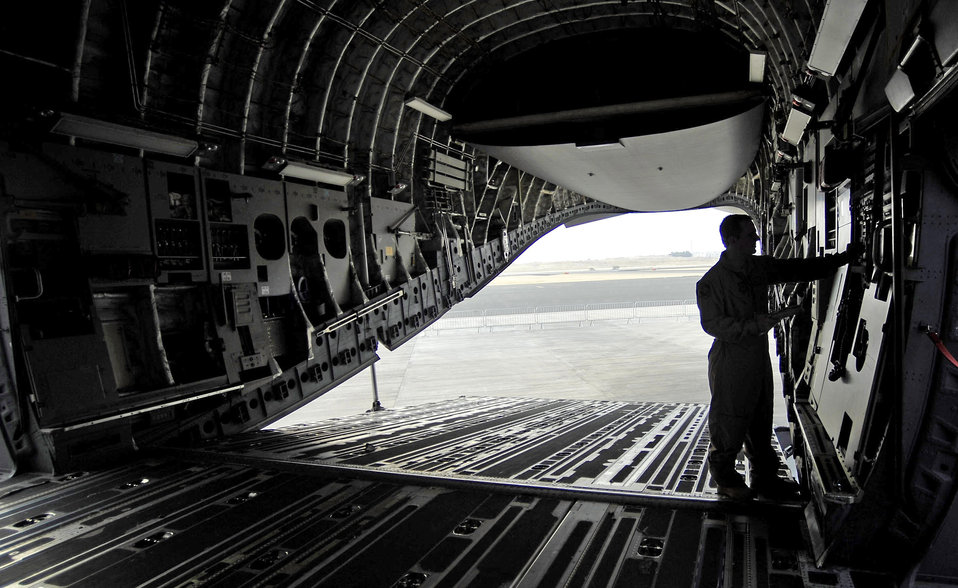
Last minute check

Staff Sgt. Ken Travis troubleshoots a hydraulic system on a C-17 Globemaster III Jan. 22, 2010, during the Bahrain International Airshow. Sergeant Travis is a crew chief with the 437th Aircraft Maintenance Squadron.